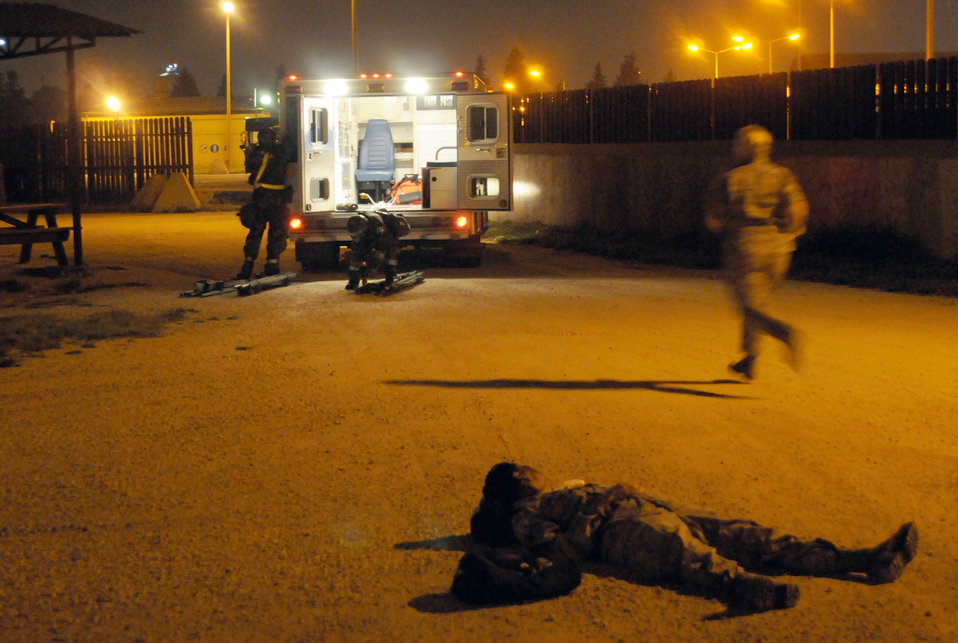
Incirlik's anti-terrorism exercise

First responders prepare to triage